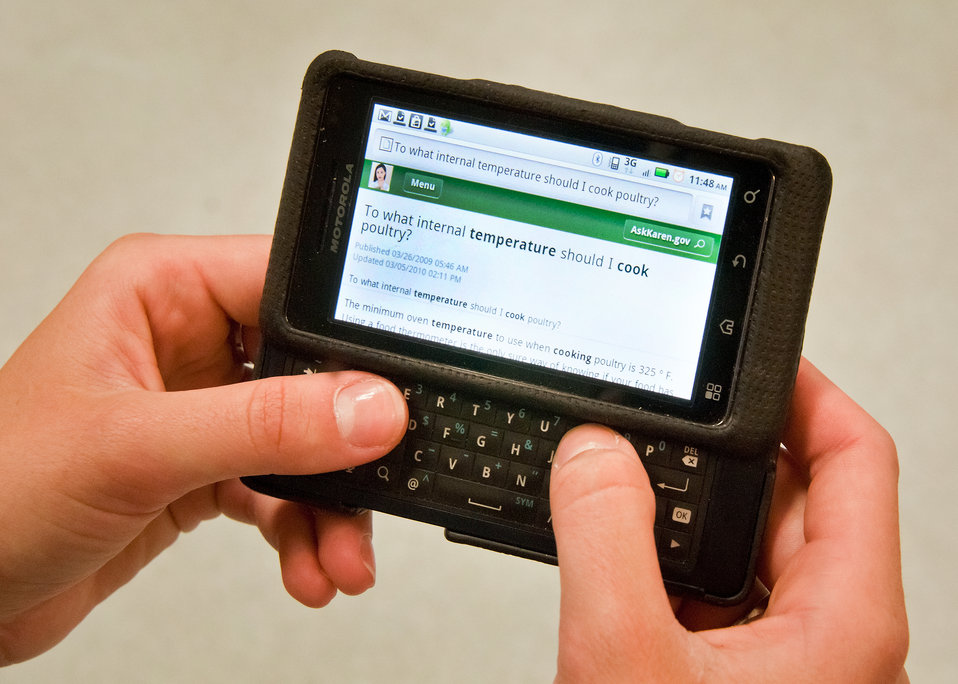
“Ask Karen,” an online food safety question and answer service provided by the United States Department of Agriculture. Food Safety Inspection Service is now mobile. “Ask Karen” provides 24/7 virtual assistance and tips on preventing food borne illness, safe food handling, storage and safe preparation of meat, poultry and egg products. The 'Ask Karen' app was announced at the United States Department of Agriculture, Food Safety Inspection Service, Food Safety Education Camp held at Maryland City Elementary in Laurel, MD, on Thursday, May 5, 2011.